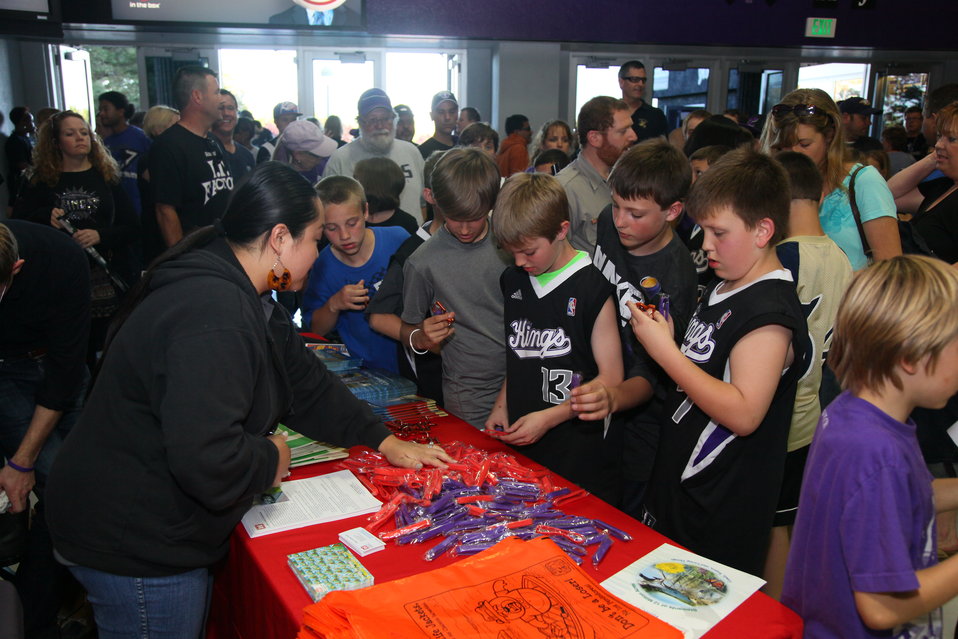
Water safety with the Kings

A crowd of young Sacramento Kings fans grab water safety information fromSacramento District public affairs specialist Katrina Natividad (left) before the Kings’ game against the Oklahama City Thunder in Sacramento, Calif., April 20, 2012. U.S. Army Corps of Engineers park rangers and mascotBobber the Water Safety Dog were out spreading the word on how to stay safe on the water this summer.